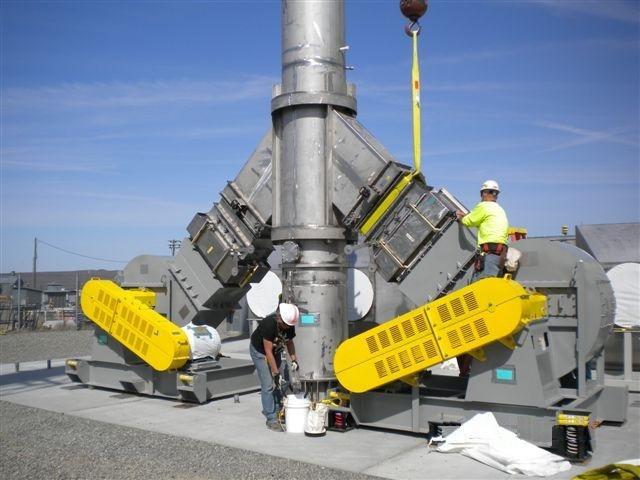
242-A Evaporator Installation